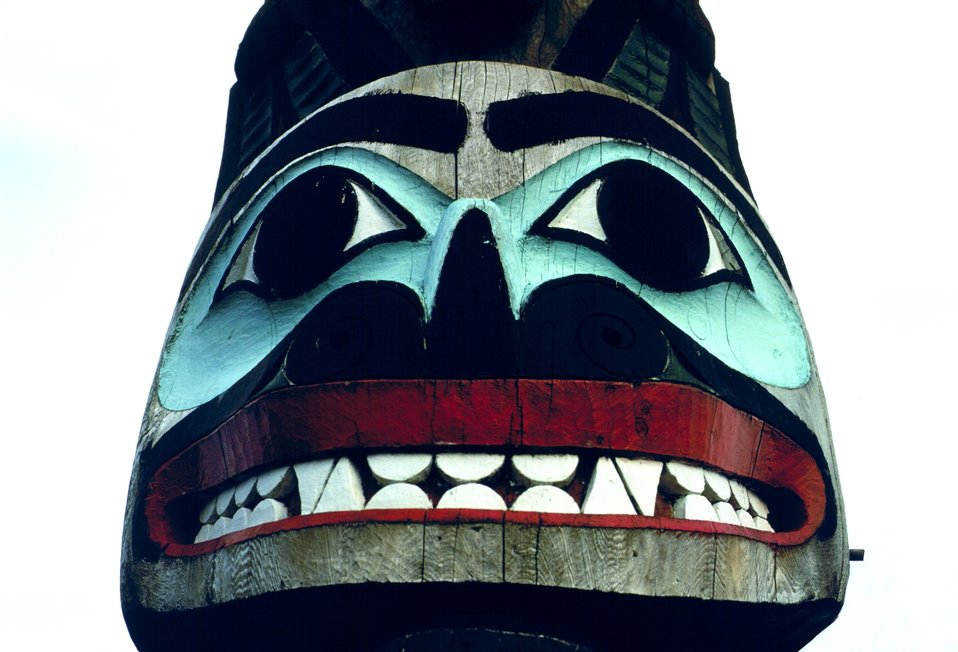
Totem pole Saxman Totem Park.